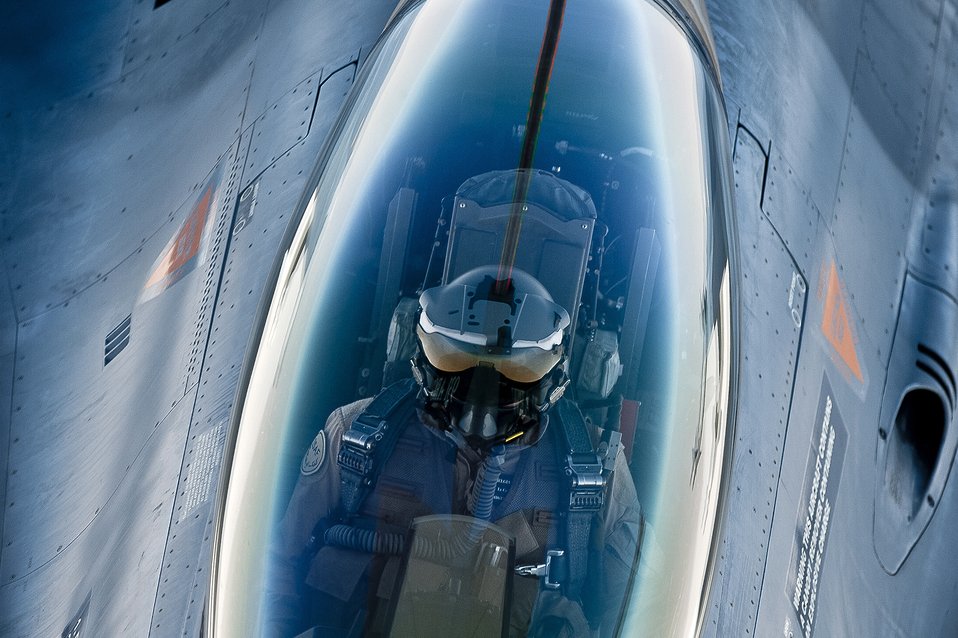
Fueled For The Fight

A KC-135 Stratotanker connects with a Belgian F-16 Fighting Falcon during aerial refueling Aug. 18, 2011, over Afghanistan. The pilot was on a mission providing close-air support to coalition forces in Afghanistan.